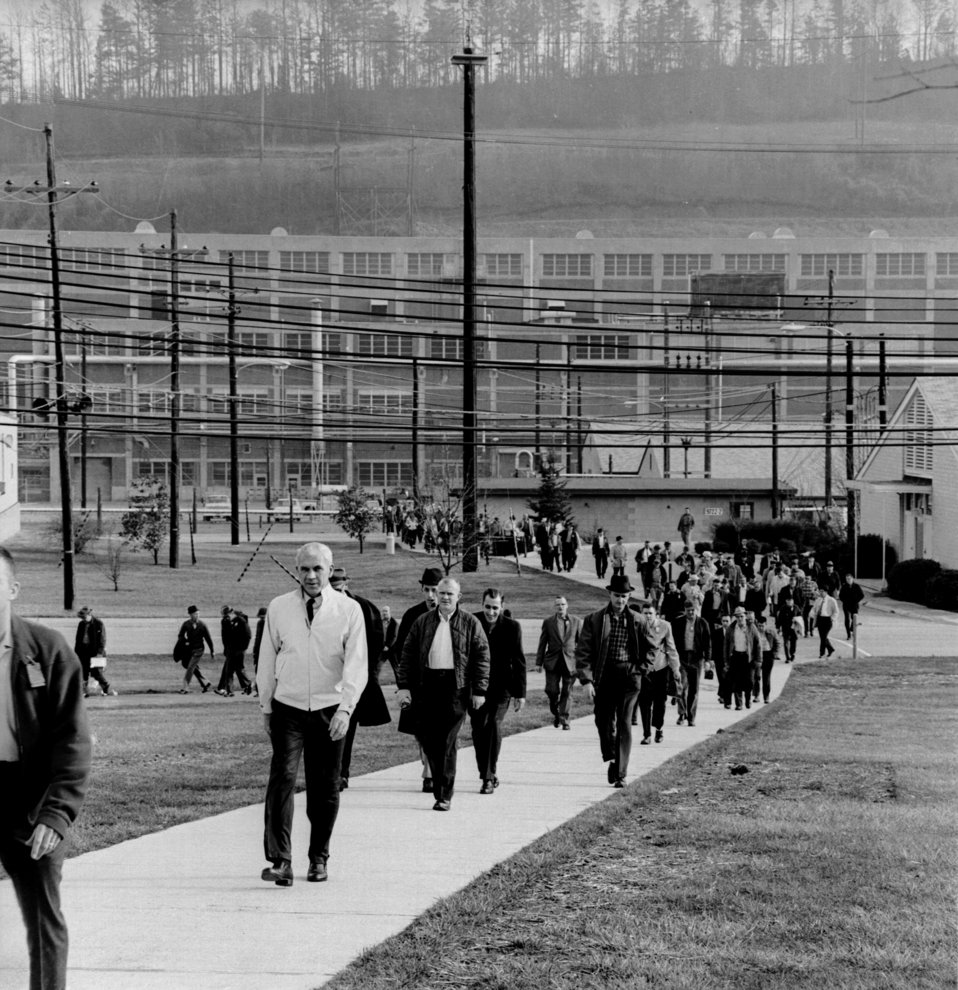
Shift change at Y-12 Oak Ridge

66-0022b DOE photo by Ed Westcott

Shift change at Y-12 Oak Ridge Tennessee 2-14-1966